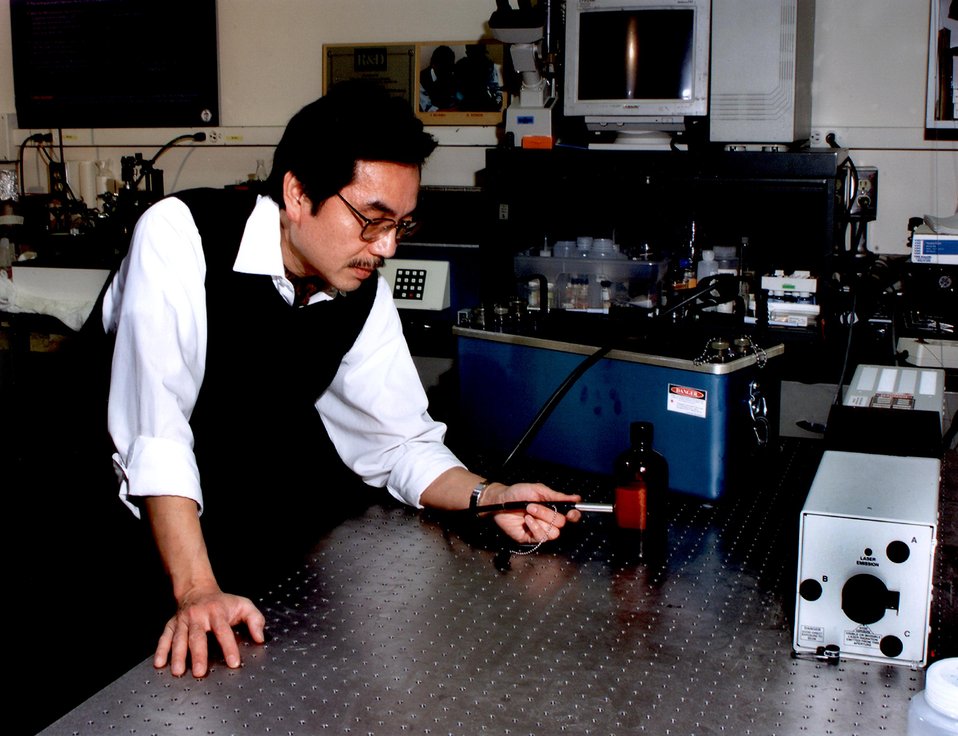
ORNL SCIENTIST DEMONSTRATING THE PORTABLE RAMITS SENSOR.

A BATTERY-OPERATED, FIELD PORTABLE, RAMAN INSTRUMENT HAS BEEN DEVELOPED BY ORNL SCIENTISTS AND ENGINEERS FOR THE AUTOMATED IDENTIFICATION OF HAZARDOUS MATERIALS. THE INSTRUMENT USES A LASER AND TUNABLE FILTER TO DETECT THE VIBRATIONAL SIGNATURE OF CHEMICAL SPECIES THAT ARE PRESENT.